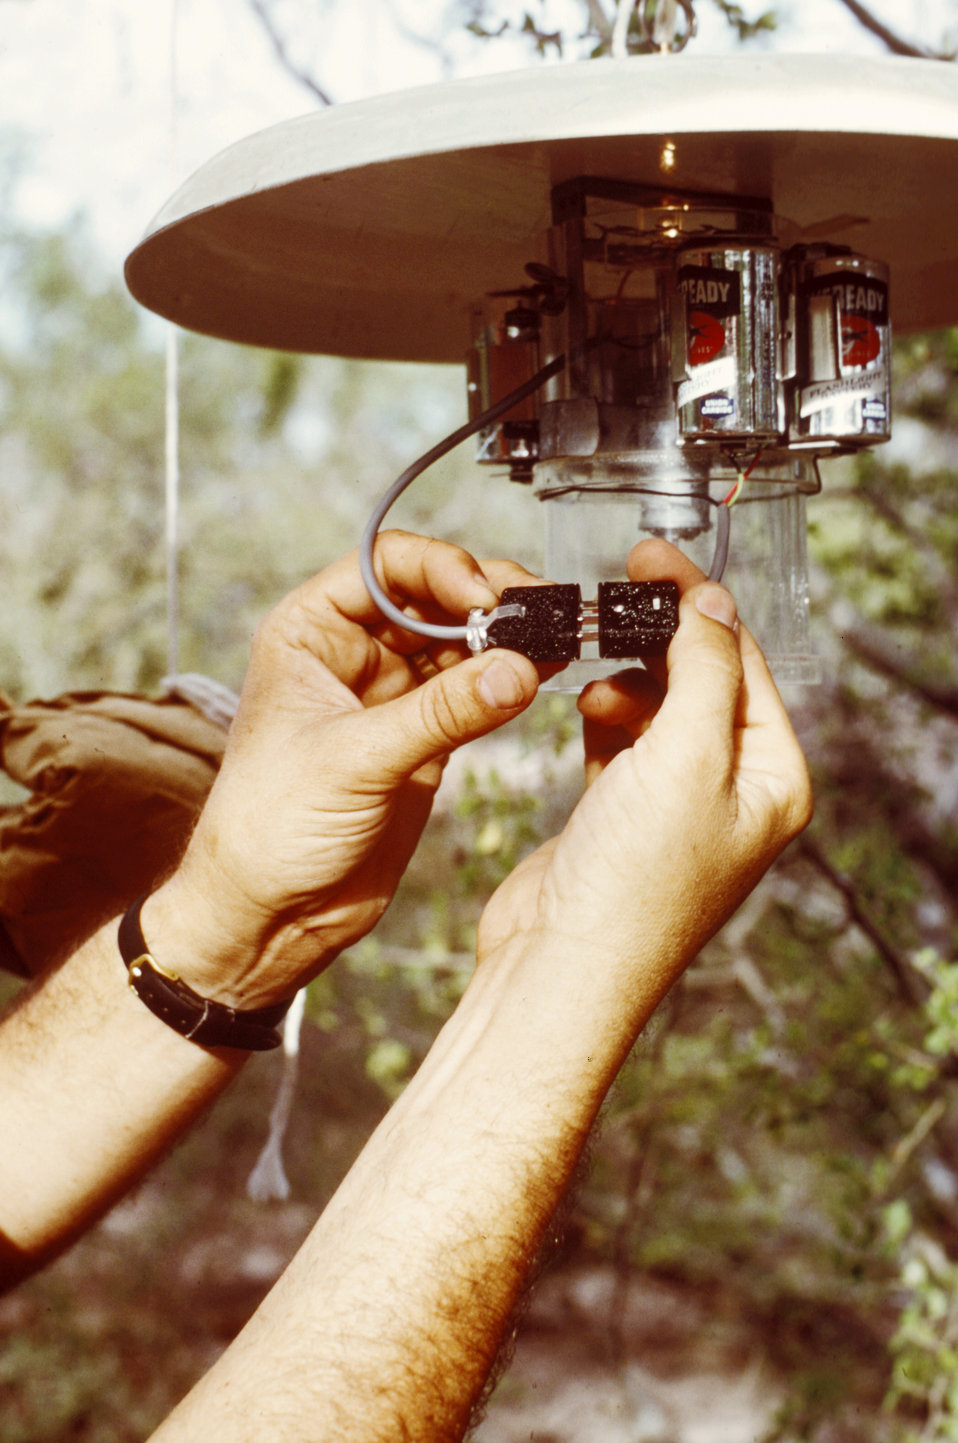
This technician is setting up a CDC light trap in order to collect mosquitoes in the field.